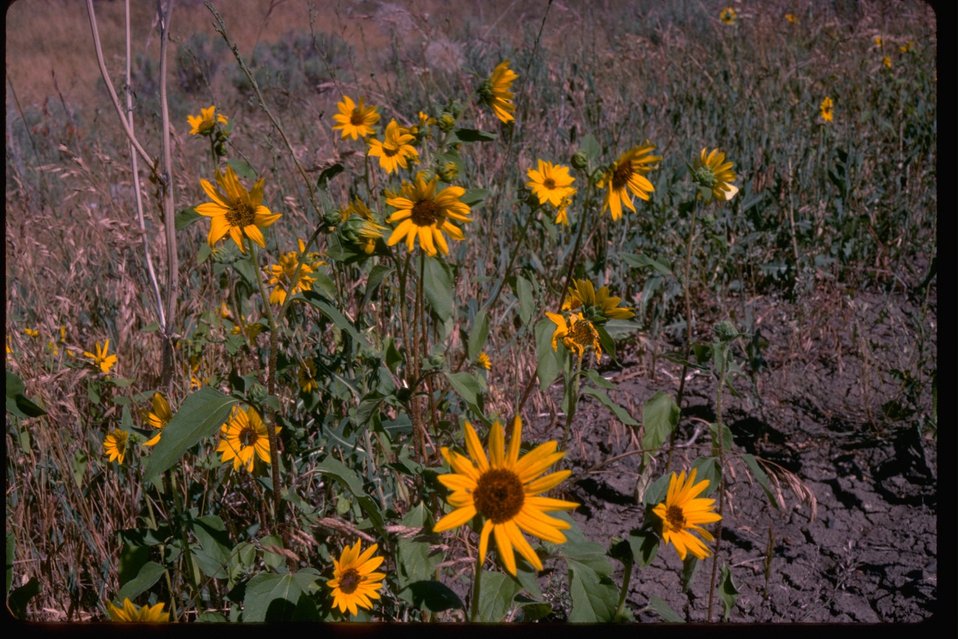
Helianthus Annuus